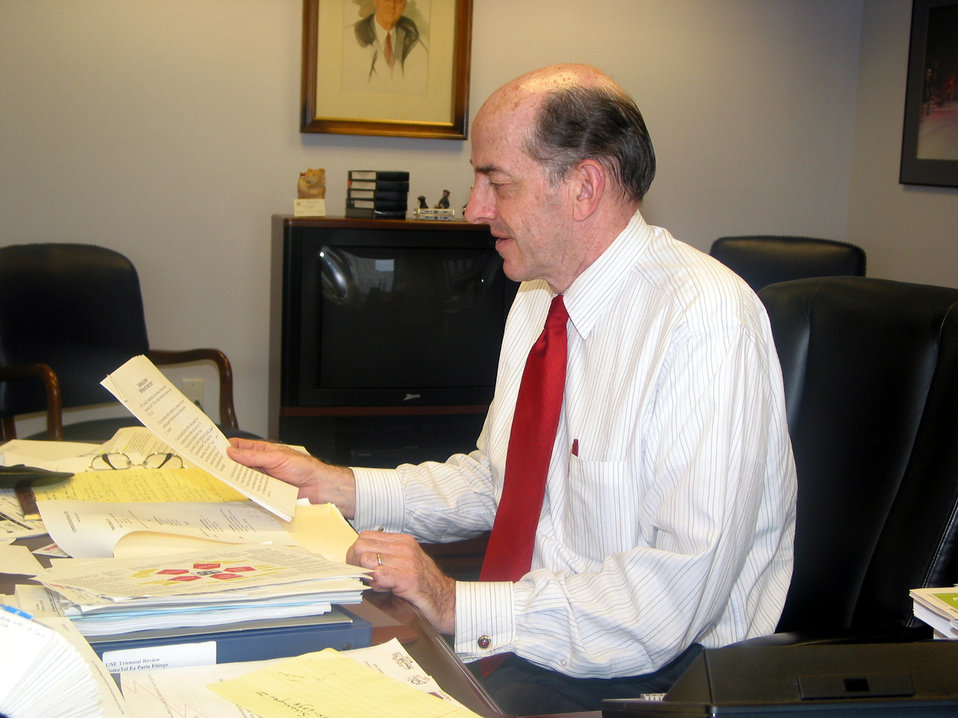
ppmjc-3